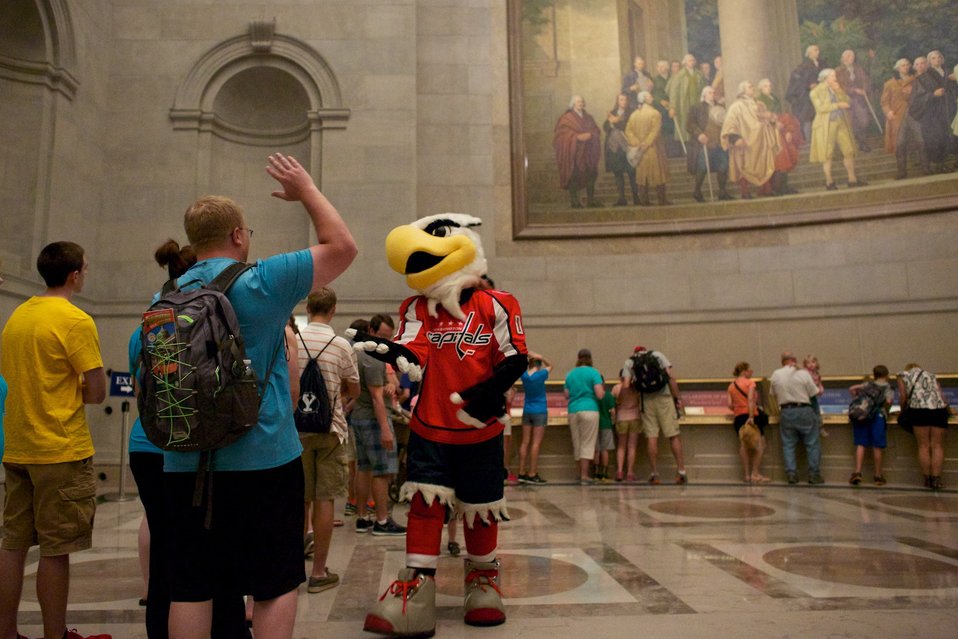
Washington Capitals mascot Slapshot visits the National Archives